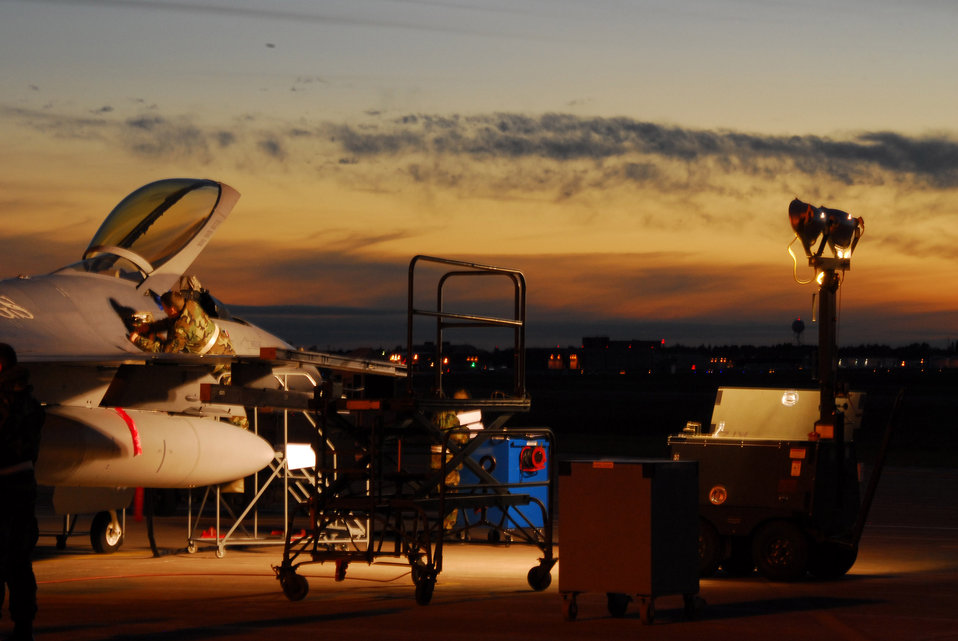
Air National Guard unit earns 'Star' rating

A member of the 148th Fighter Wing works on an F-16 Fighting Falcon during an October 2007 Operational Readiness Exercise in Duluth, Minn. The 148th FW was selected by Occupational Health and Safety Administration officials for the Voluntary Protection Program Star Award.